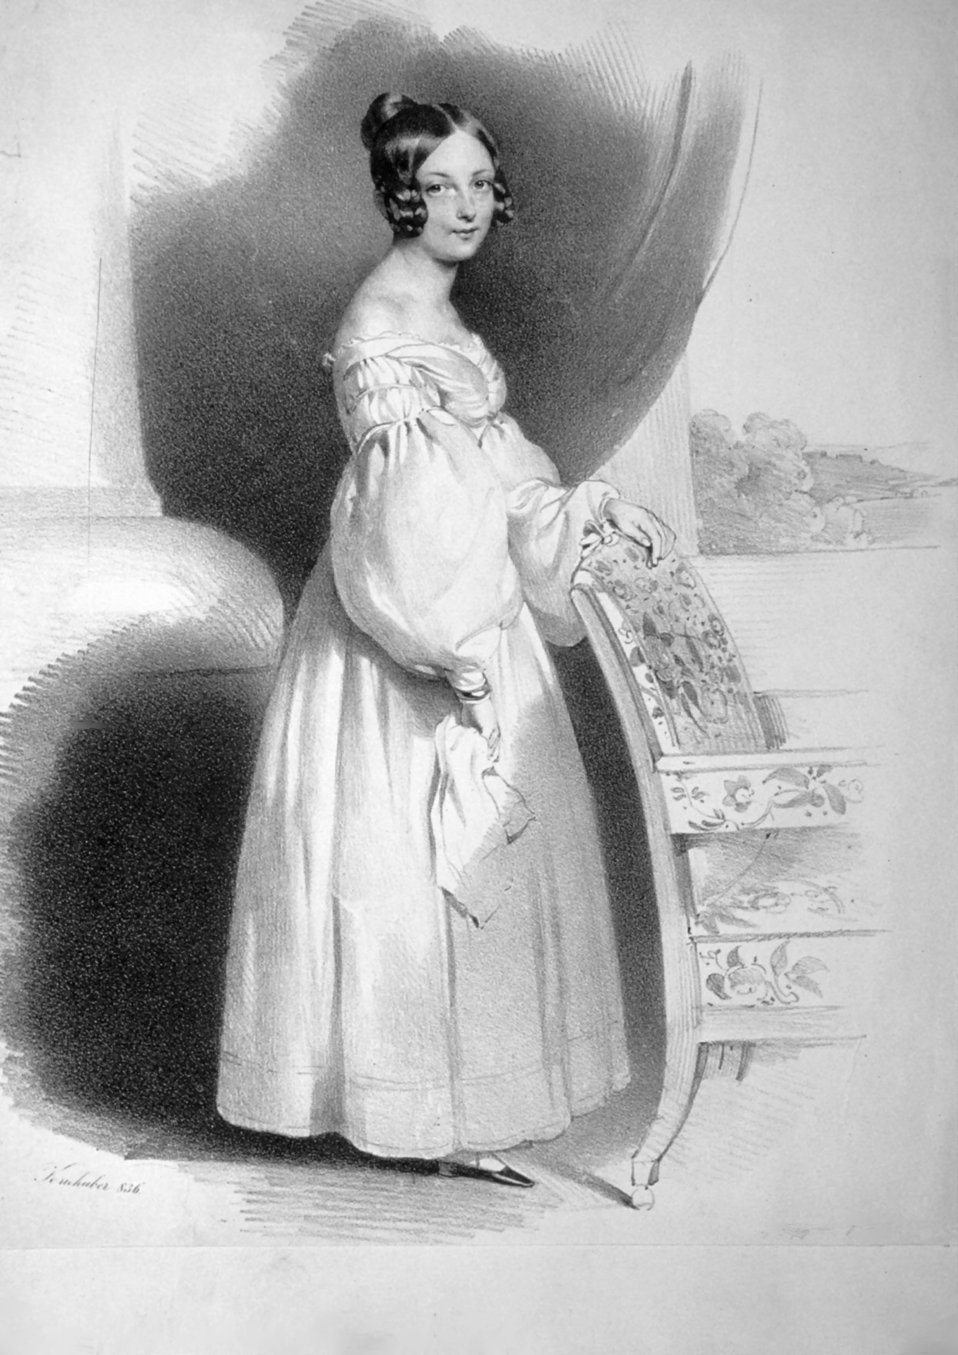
Claudine Rhedey von Kis-Rhede